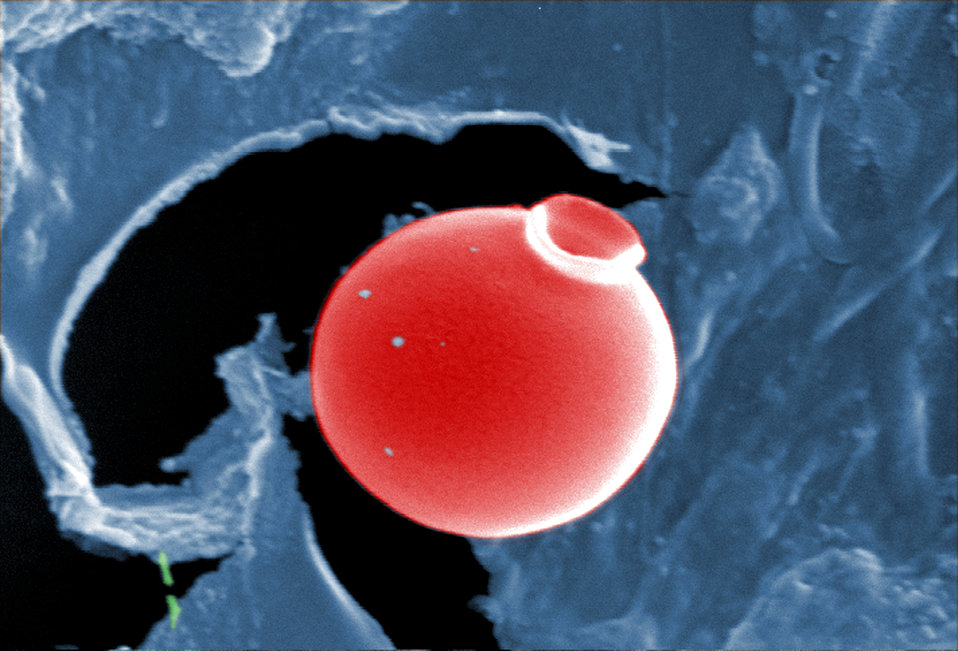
This digitally-colorized scanning electron micrograph (SEM) of an untreated water specimen extracted from a wild stream mainly used to control flooding during inclement weather, revealed the presence of unidentified organisms, which included bacteria, protozoa, and algae. Clearly visible in the center of this image, was a exquisitely-formed unidentified round vescicle-shaped microorganism, which may have been algal, or diatomic. Shaped like an ancient Grecian urn, the almost perfectly rounded smooth, flawless surface was made even more beautiful given its delicate structure.